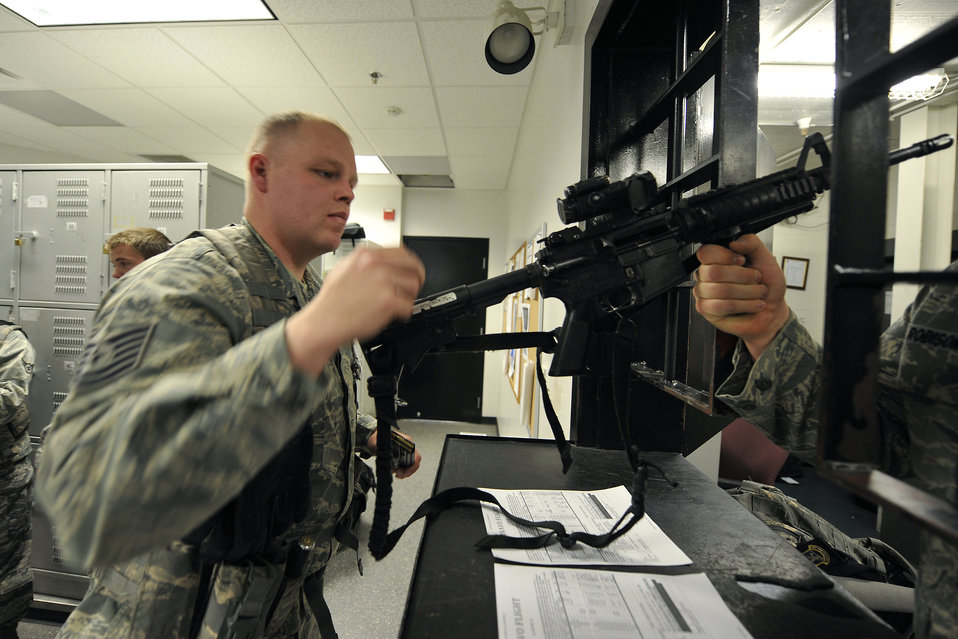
Schriever SFS training

Tech. Sgt. Conrad Schenck arms up as he begins his shift during guard mount at the base armory June 15, 2011, at Schriever Air Force Base, Colo. Sergeant Schenck is a member of the 50th Security Forces Squadron.